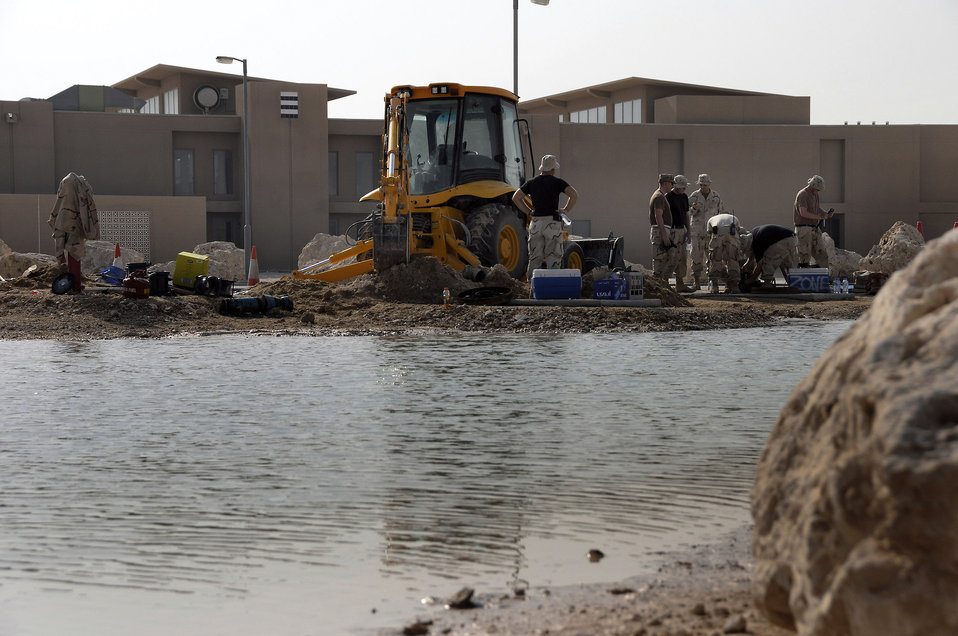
Emergency repairs

Civil engineers assigned to the 379th Expeditionary Civil Engineer Squadron plan their next steps to restore water to the Blatchford-Preston Complex as they stand next to a small temporary lake created by the release of water from an overnight break in a water line Sept. 15 at a Southwest Asia air base. Servicemembers here support Joint Task Force-Horn of Africa and operations Iraqi Freedom and Enduring Freedom.